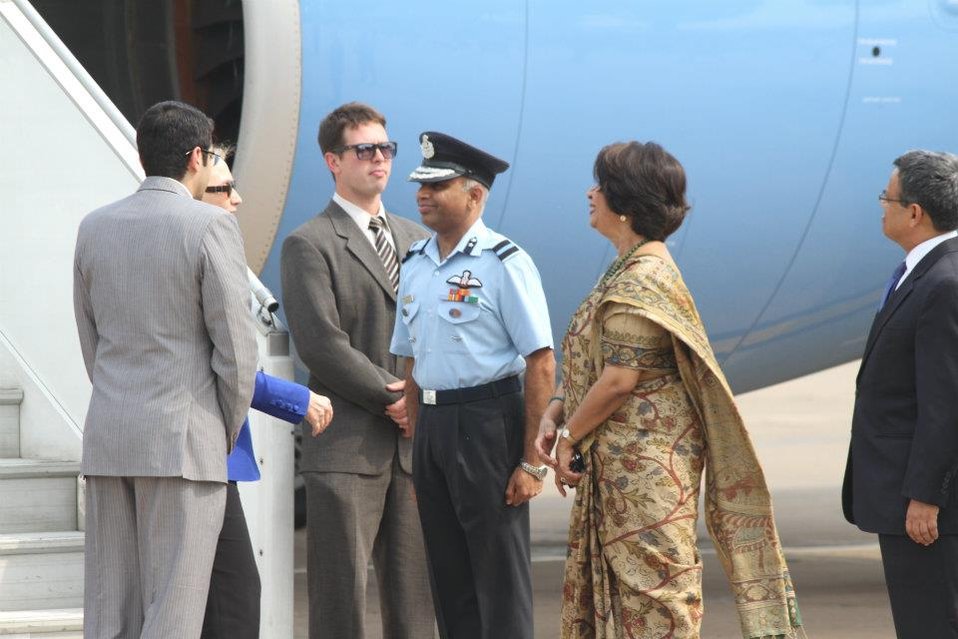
Secretary Clinton Is Welcomed By Ambassador Rao

U.S. Secretary of State Hillary Rodham Clinton is welcomed by India's Ambassador to the United States Nirupama Rao upon her arrival to New Delhi, India, on May 7, 2012.